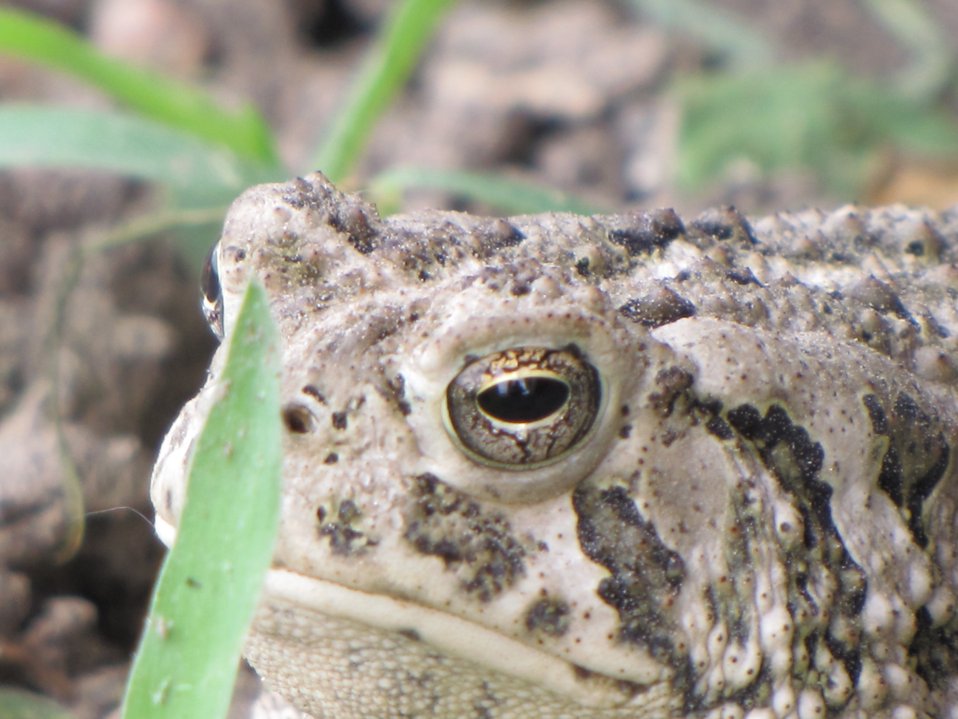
Great Plains Toad

One of the best things about our new office at the Rainwater Basin Wetland Management District is our summer visitors. These toads seem to enjoy our building and I can't thank them enough for consuming all the crickets that seem to want to call our office 'home.'

Credit: Laurel Badura / USFWS

Photo Contest Entry #186